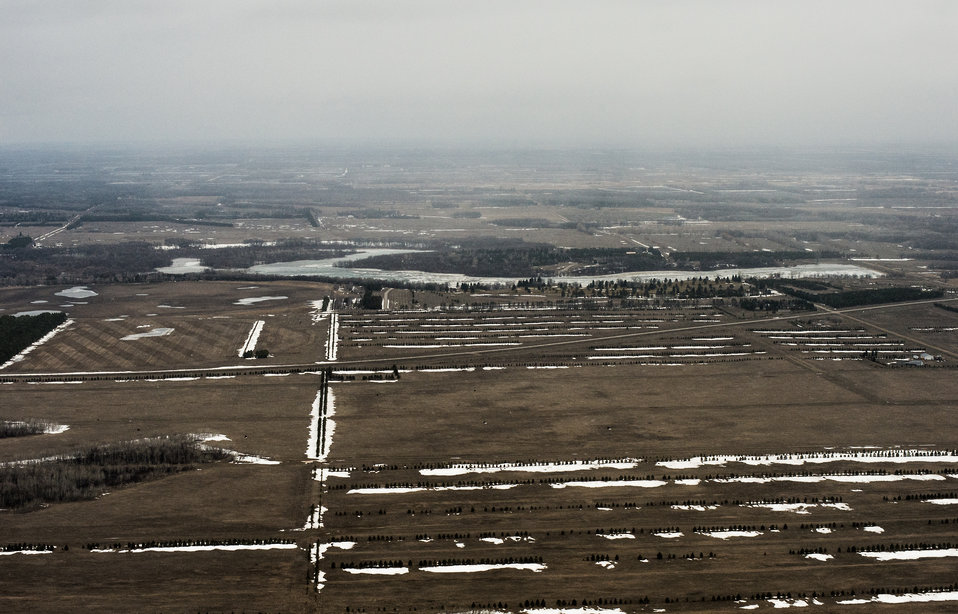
Flood pools for Renwick and Morris Dam, in Pembina County, ND, part of the Red River basin, on Wednesday, May 1, 2013. For information about this and other programs from the USDA Red River Basin Initiative (RRBI) please see www.mn.nrcs.usda.gov/news/features13/RRBI.html.